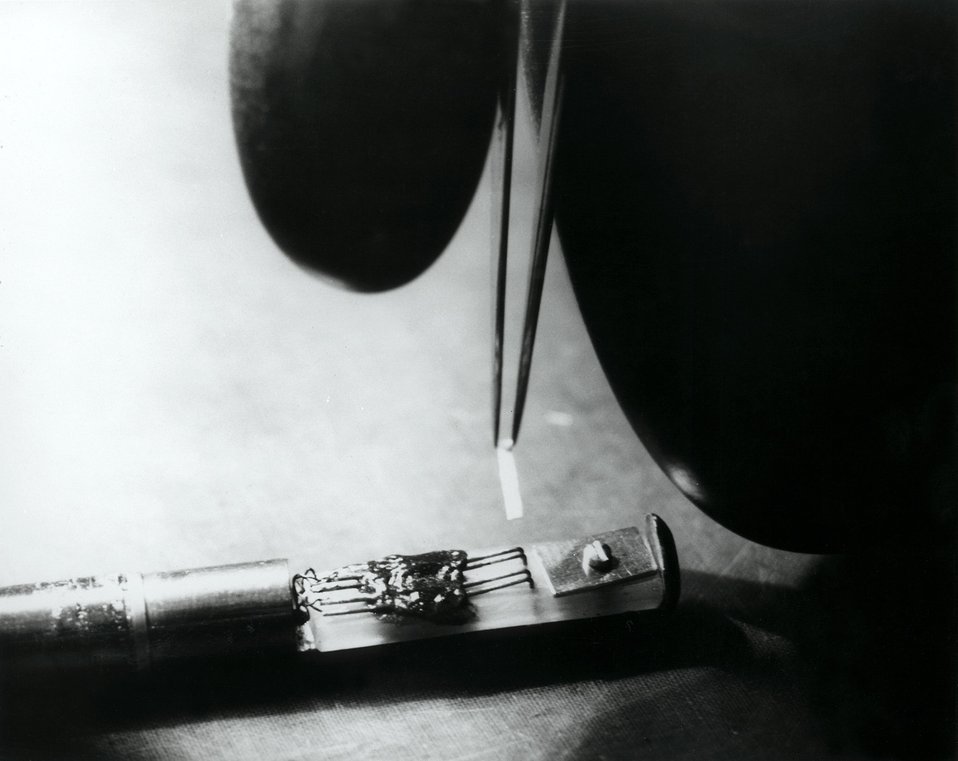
In this photo, a plutonium sample is shown being loaded into a sample holder for measuring electrical resistivity at very low temperature.
c.1971